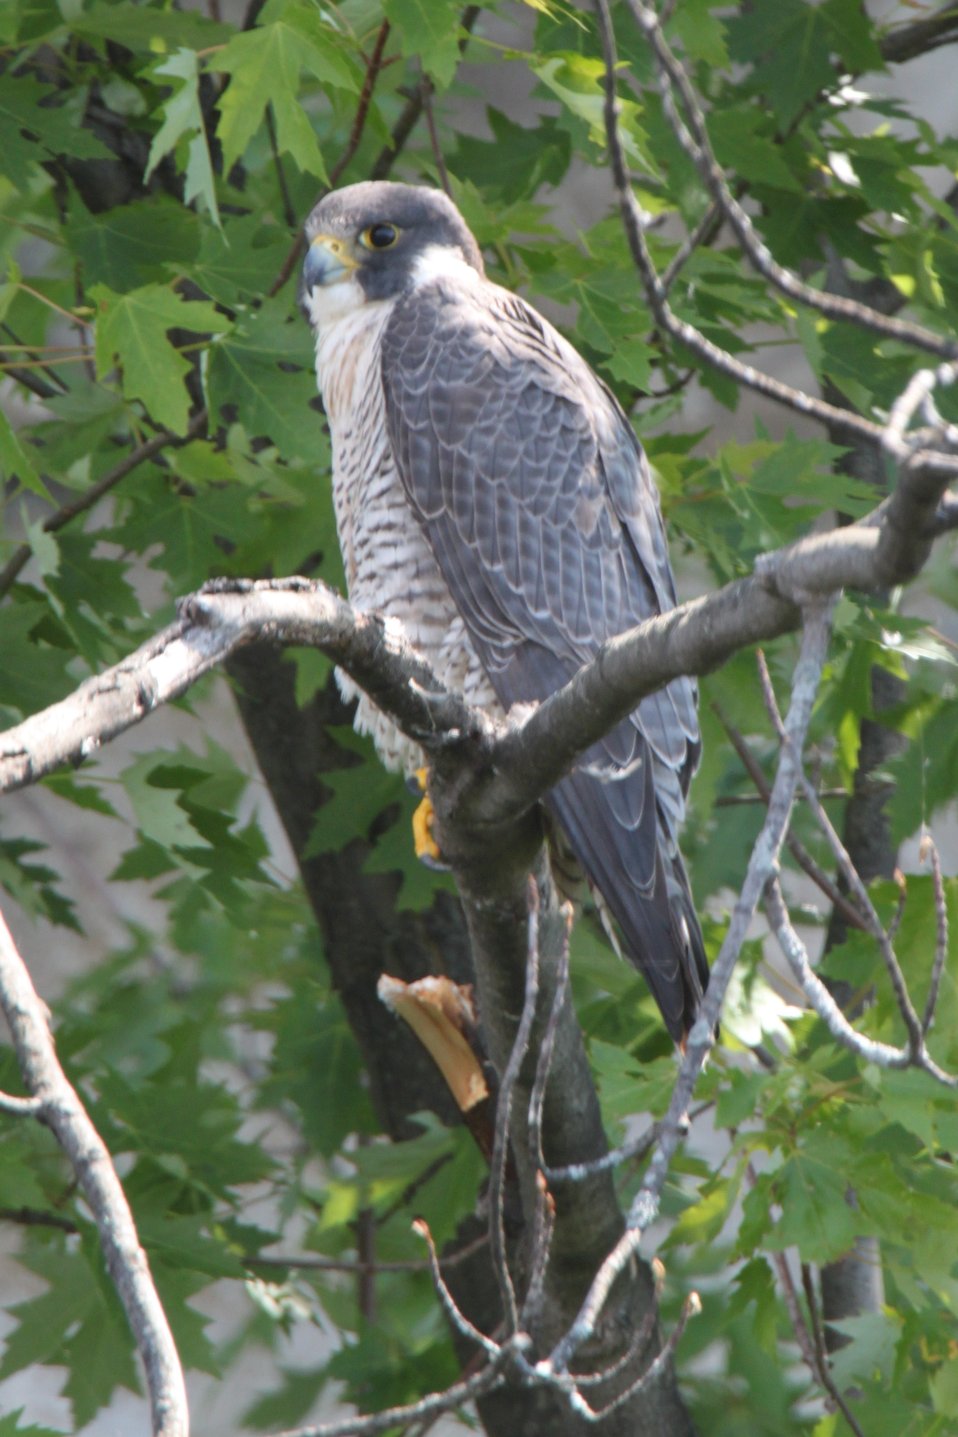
Female Peregrine Falcon photographed at Missisquoi National Wildlife Refuge.